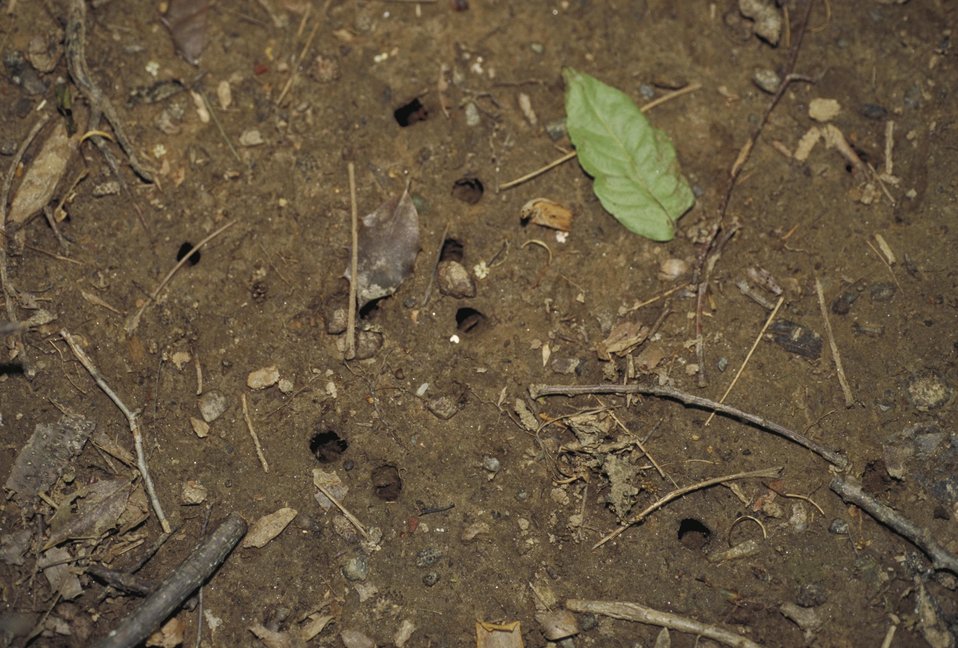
Holes are visible in the ground from emerging seventeen year Cicadas in Woodbridge, VA. In the early spring of 2013 the eastern half of the U.S. will see and hear the emergence of the 17-year Cicada (Magicicada). The 17-year Cicada is a large insect with a black body, red eyes, and delicate wings about an inch and a half long. The Cicada will emerge from the ground as nymphs, climb onto trees and shed their skins. The males will then sing loudly to attract female mates. Once mated the females lay approximately 400 to 600 eggs in tree branches before they die. The nymphs hatch and burrow into the ground and live underground for the next 16 years sucking sap out of tree roots. The cicada’s above ground cycle lasts about a month before they die. Cicada’s have no sting or bite and are harmless to humans and pets, however the constant singing is annoying.